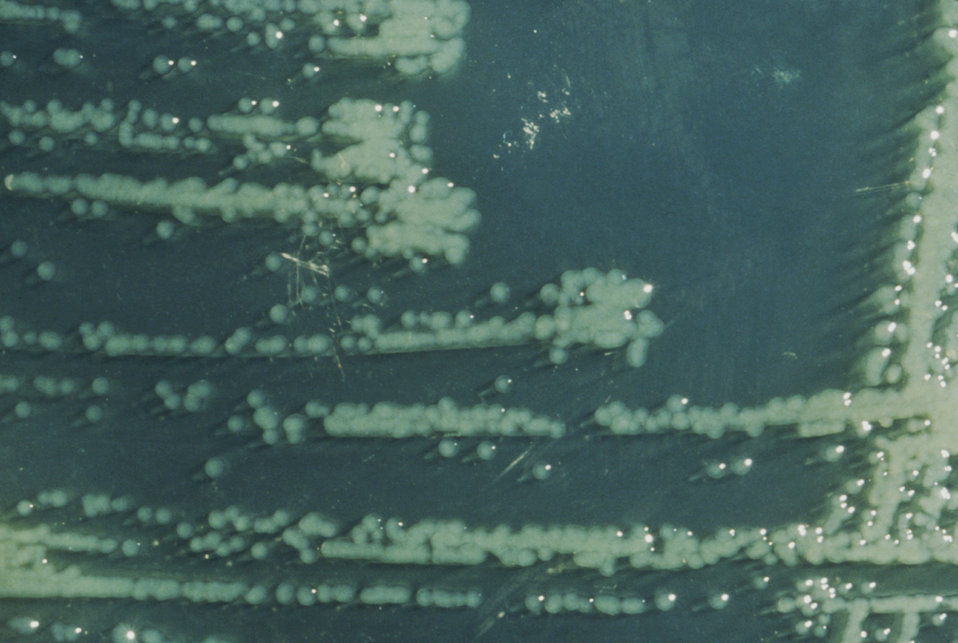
This photograph depicts the colonial growth pattern displayed by Yersinia enterocolitica bacteria growing on a Hektoen enteric (HE) agar medium; Y. enterocolitica is a non-lactose fermenter, and its colonies atop the HE agar are blue-green in color.